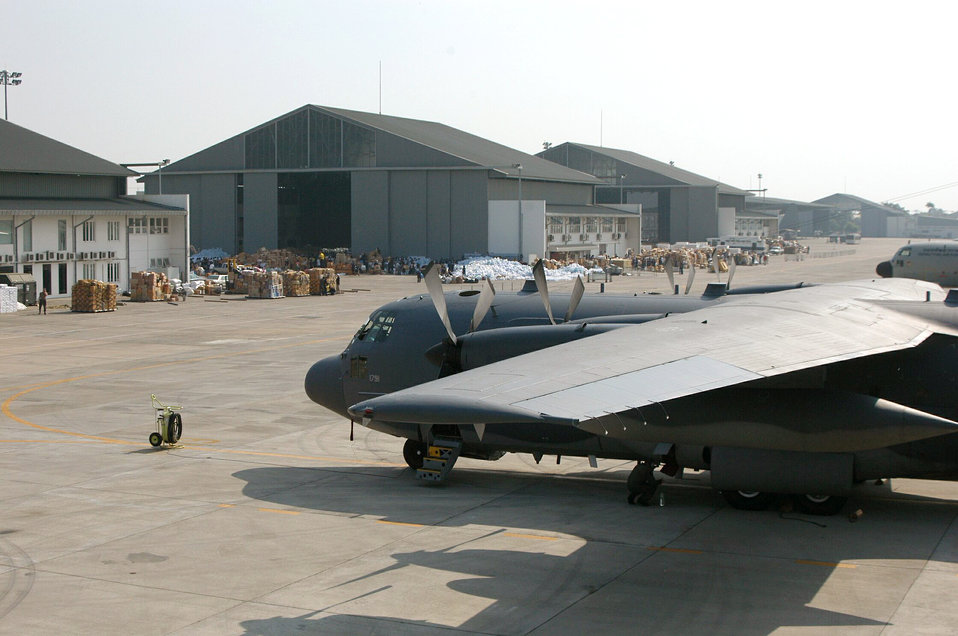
Airmen continue to deliver relief in Thailand

BANGKOK, Thailand -- An MC-130 from Kadena Air Base, Japan, awaits loading in front of a Royal Thai air force hangar here that has become the relief donation center for the kingdom.